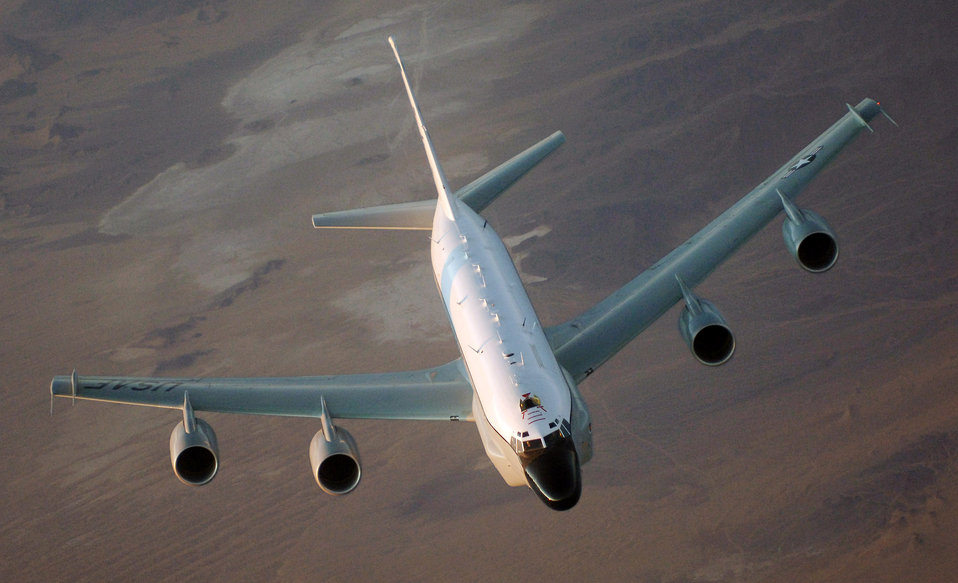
Jan. 11 marks 6,000 consecutive days in Southwest Asia

An RC-135 Rivet Joint flies over Afghanistan Jan. 9. The intelligence reconnaissance aircraft carries a 34-member crew has been consistently deployed to Southwest Asia for a milestone 6,000 days since Aug. 9, 1990, just before Operation Desert Shield.